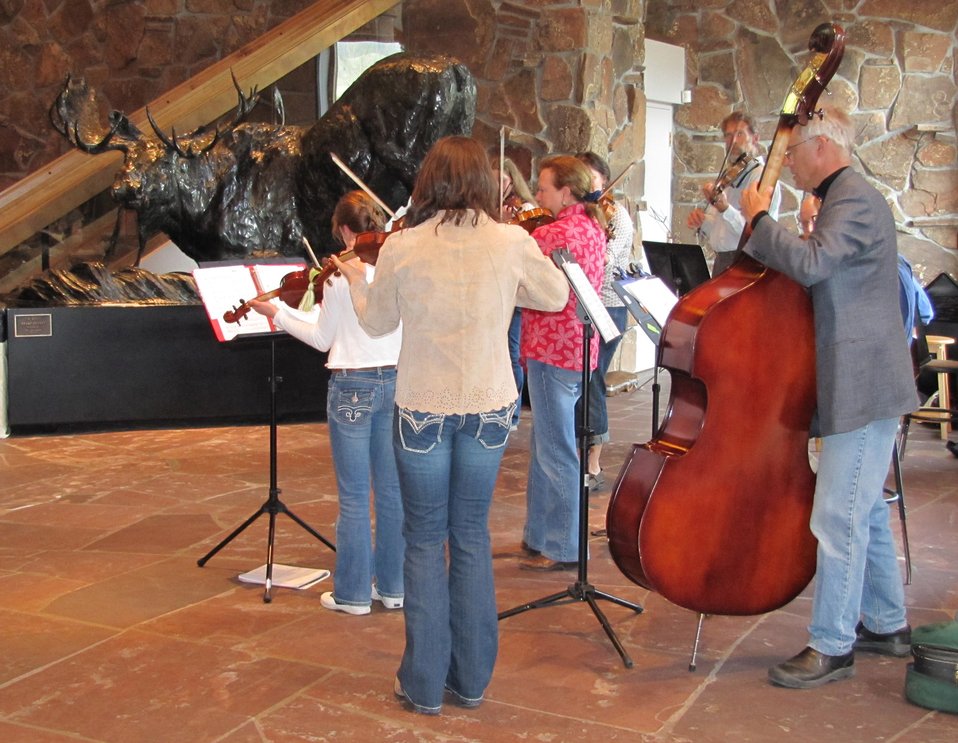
Music During the Social Hour

Shelley Rubrecht and her Teton Fiddlers provided fun music during the social hour on the National Elk Refuge's '100 Days to 100 Years' celebration at the National Museum of Wildlife Art on May 2, 2012.